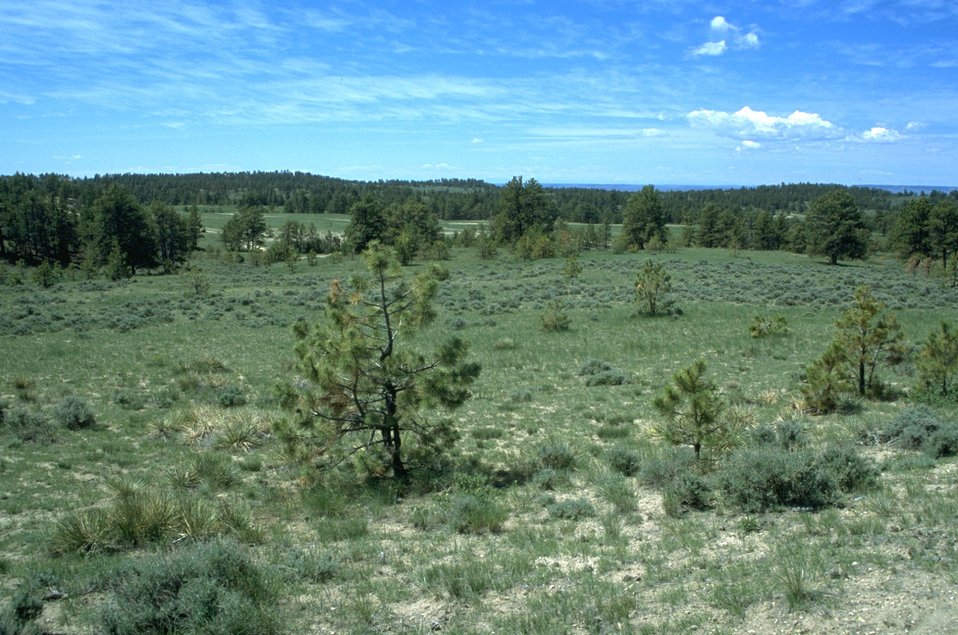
Looking west across sagebrush and ponderosa pine in the Shepherd Recreation Area - OHV Area 1